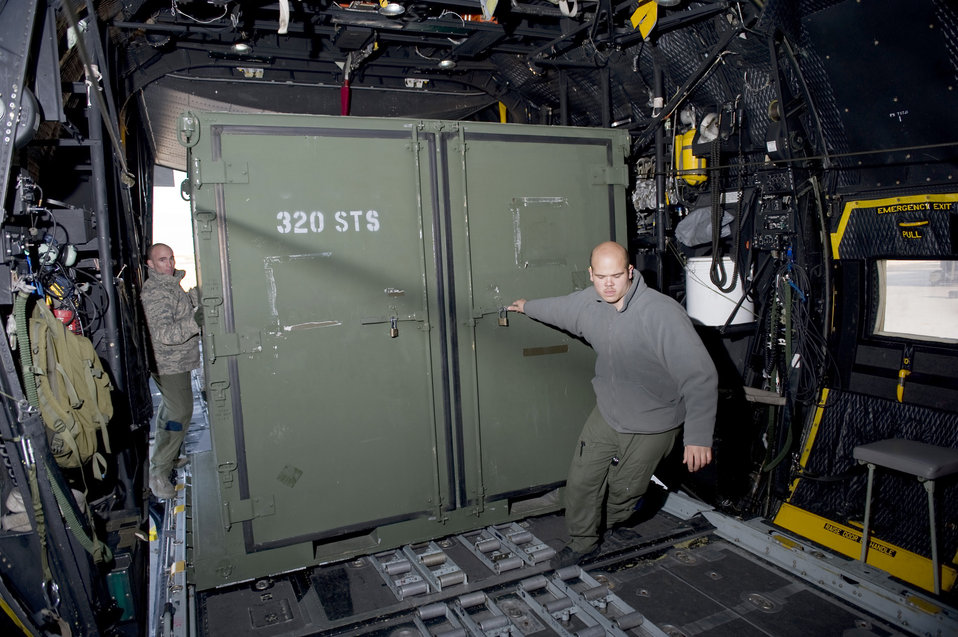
Delivering supplies

Master Sgt. Mike Milich and Senior Airman Ramon Mortensen load supplies aboard an MC-130P Combat Shadow March 16, 2011, at Kadena Air Base, Japan, prior to departing for Sendai Airport, Japan. Sergeant Milich and Airman Mortensen are both assigned to the 353rd Special Operations Group.